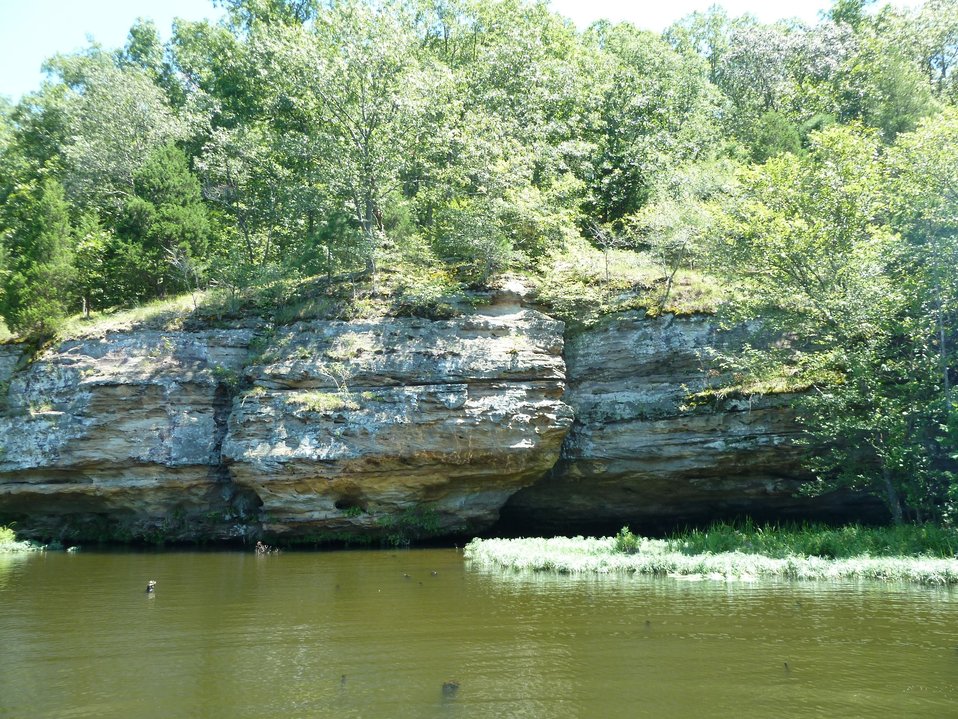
IL - Devils Kitchen Lake, Crab Orchard National Wildlife Refuge